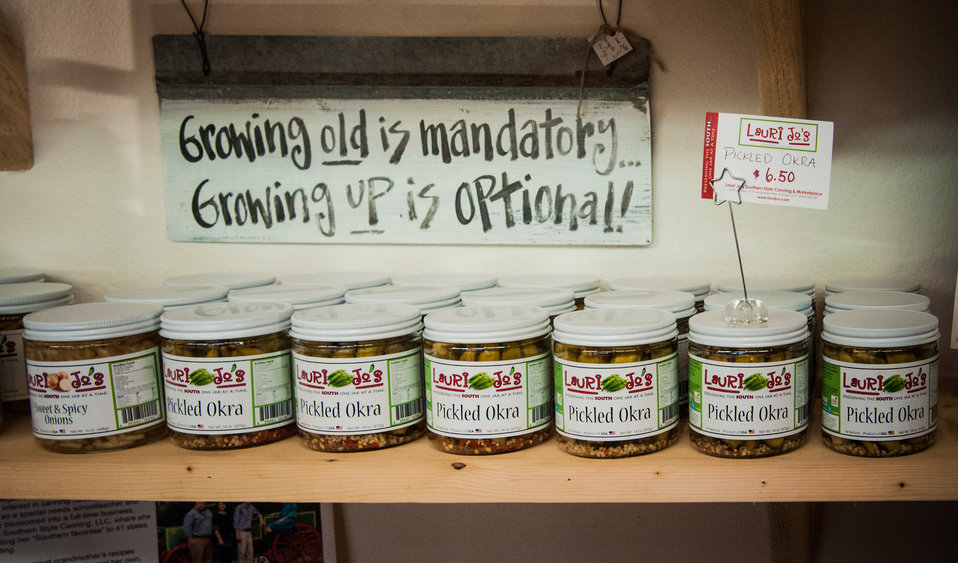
Jars of pickled okra sit on the shelf at Laurie Jo’s Southern Style Canning business in Norman Park, Colquitt County, GA on Mar. 7, 2013. The business has increased its production to 12 items that now includes pickled green tomatoes, pickled okra, pickled asparagus pickled green beans, red and green pepper jellies, pineapple pepper jelly salsa and pepper sauce. Consumers may now purchase Lauri Jo’s Southern Style Canning Line in Whole Foods, Earth Fare and Kroger stores across 20 states. Lauri Jo Bennett applied for a U.S. Department of Agriculture (USDA) Rural Development (RD) Rural Business Enterprise Grant (RBEG) to help market her products. The grant from USDA has enable Lauri Jo to employ 26 people. The USDA Strike Force Initiative has designated Colquitt County, GA as a Strike Force county selected to receive assistance to relieve persistent poverty in historically high-poverty counties.